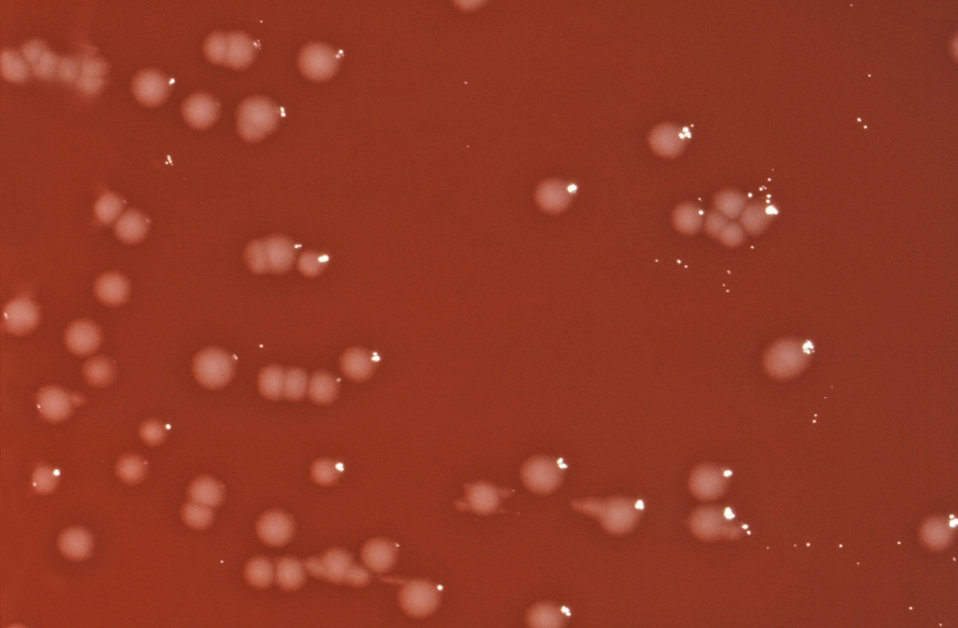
This photograph depicts the colonial morphology displayed by Gram-negative, facultatively anaerobic Citrobacter freundii bacteria cultivated on a blood agar plate (BAP).